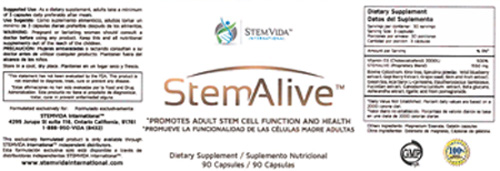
RECALLED – StemAlive 90 Capsules

January 31, 2014 – Product Recall – Stemvida International Corporation Recalls StemAlive 90 Capsules Containing Undeclared Milk.